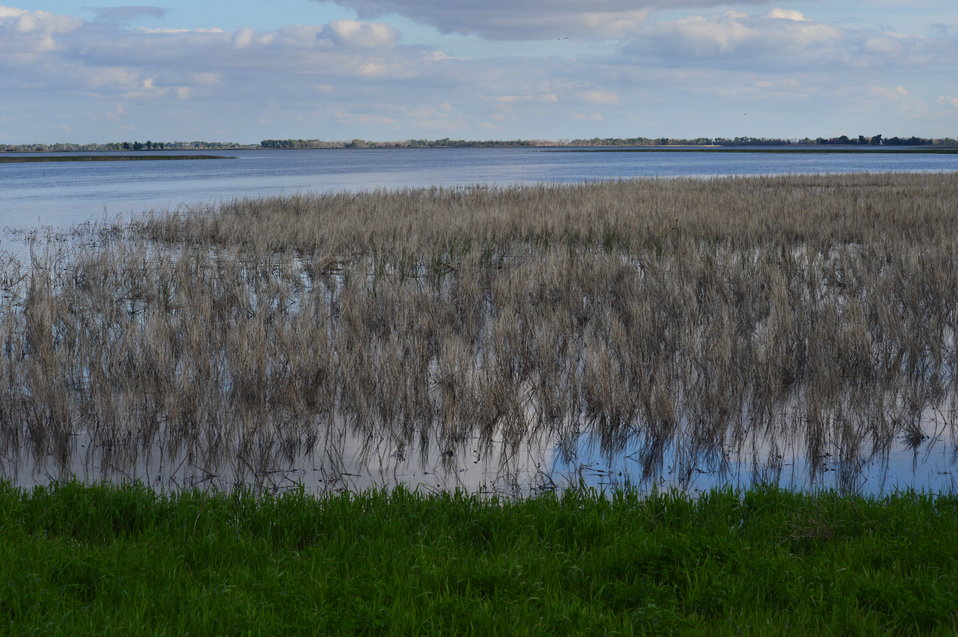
Sand Lake

Scenery and wildlife at Sand Lake National Wildlife Refuge in South Dakota